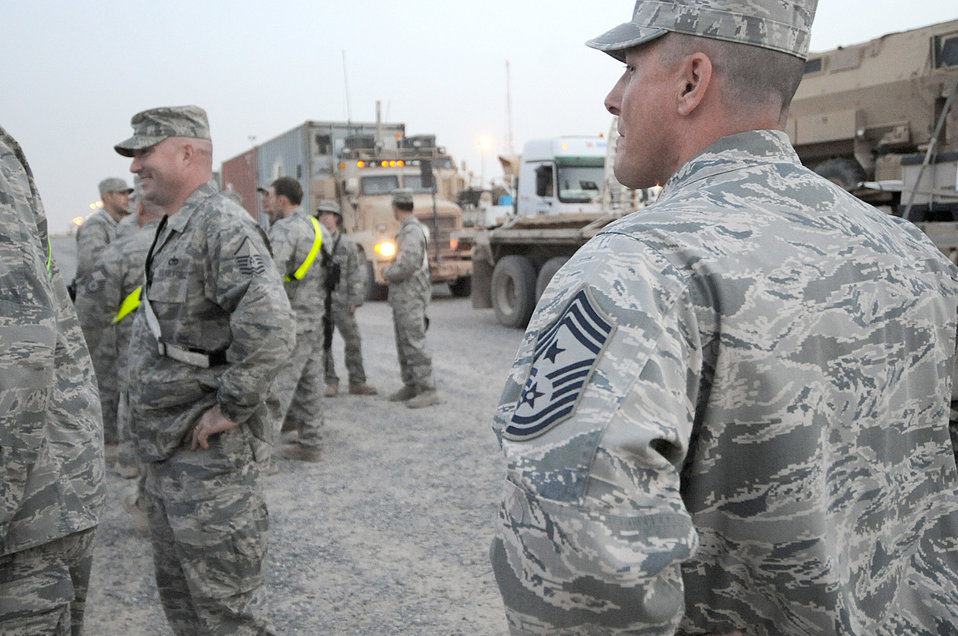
Convoy in Southwest Asia

Airmen are greeted by squadron, group and wing leaders upon their return from a convoy mission May 4, 2011, in Southwest Asia.